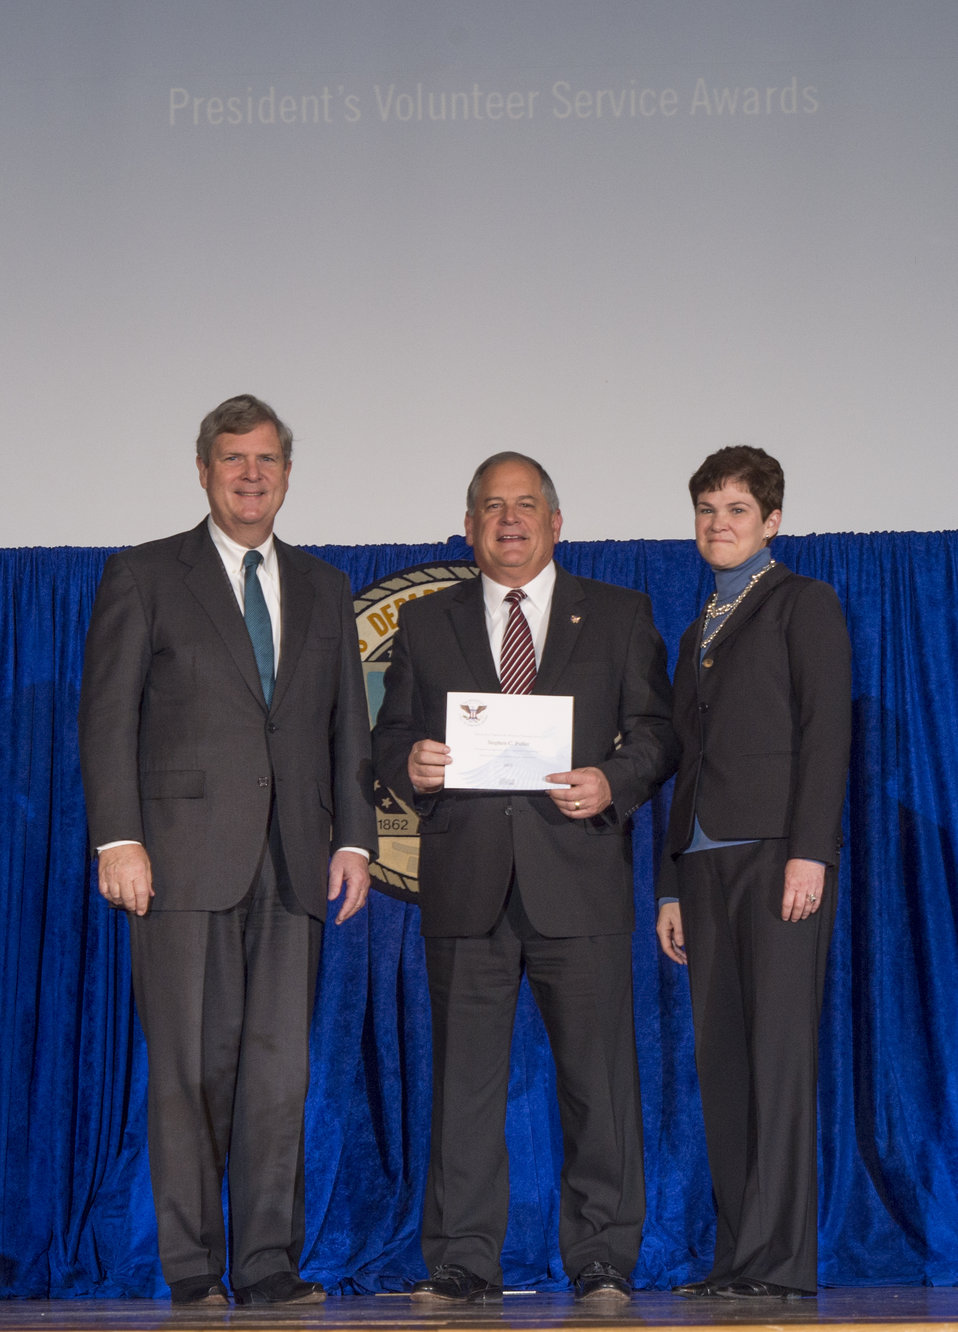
Agriculture Secretary Tom Vilsack and Agriculture Deputy Secretary Krysta Harden present the President’s Call to Service Award to Stephen Fuller at the 2013 Secretary's Honor Awards in the Jefferson Auditorium at the U.S. Department of Agriculture (USDA) in Washington, D.C. on Wednesday, Dec. 11, 2013. The President’s Call to Service Award is given to an employee who has served 4,000 hours or more of service with a qualifying organization over the employee’s lifetime.